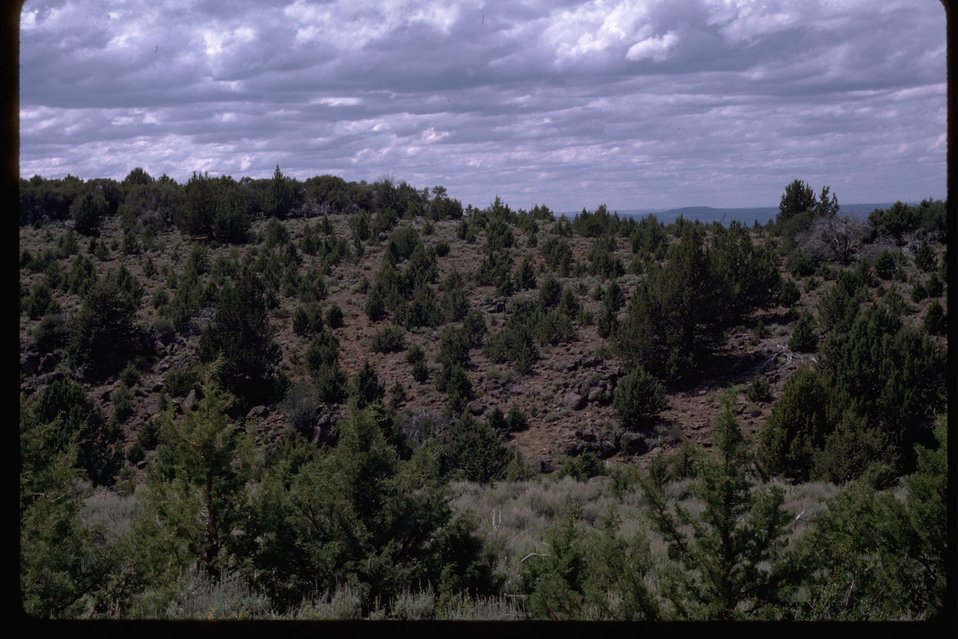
Typical back country juniper zone in the South Steens.